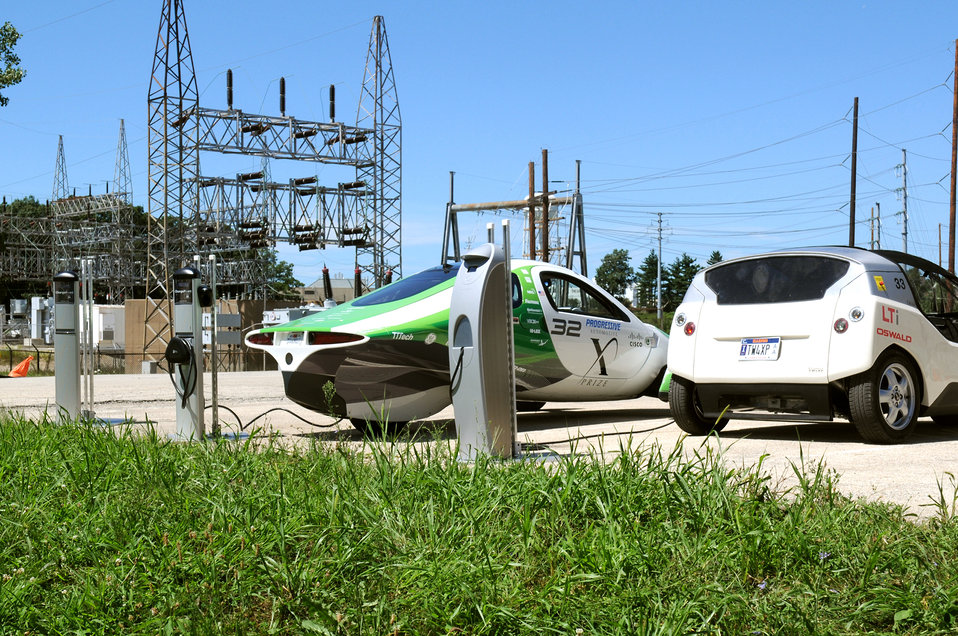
Progessive Automotive X Prize finalists recharge at smart grid charging stations outside of Argonne's Advanced Powertrain Research Facility (APRF).
ANL was the last stop for competitors in Progressive Insurance's Automotive X Prize Competition. In August 2010, APRF researchers provided validation testing for the finalists' vehicles to see if they met the competition's goal for performance and efficiency targets.